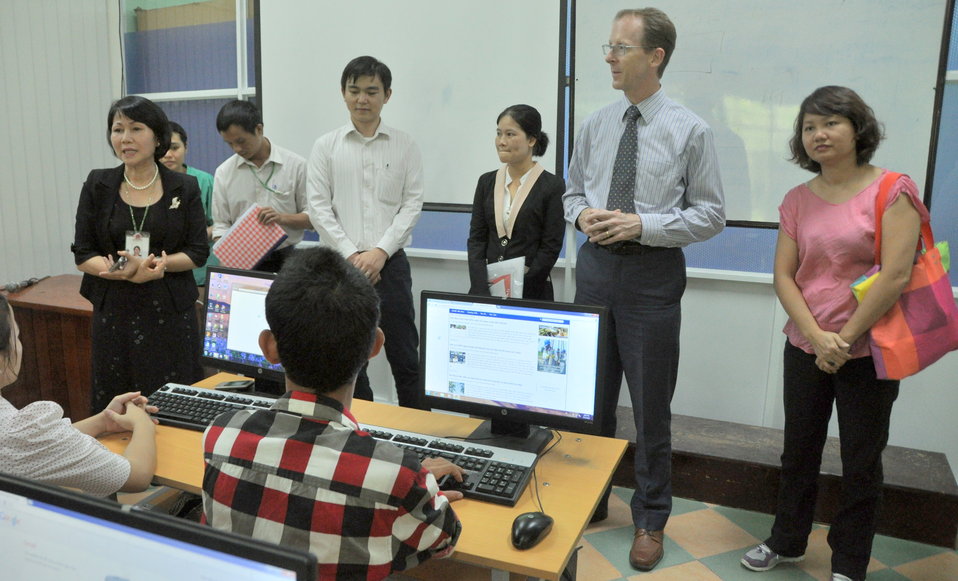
USAID Visits IT Training Program for People with Disabilities at Dong A University

Danang, Vietnam
July 17, 2013